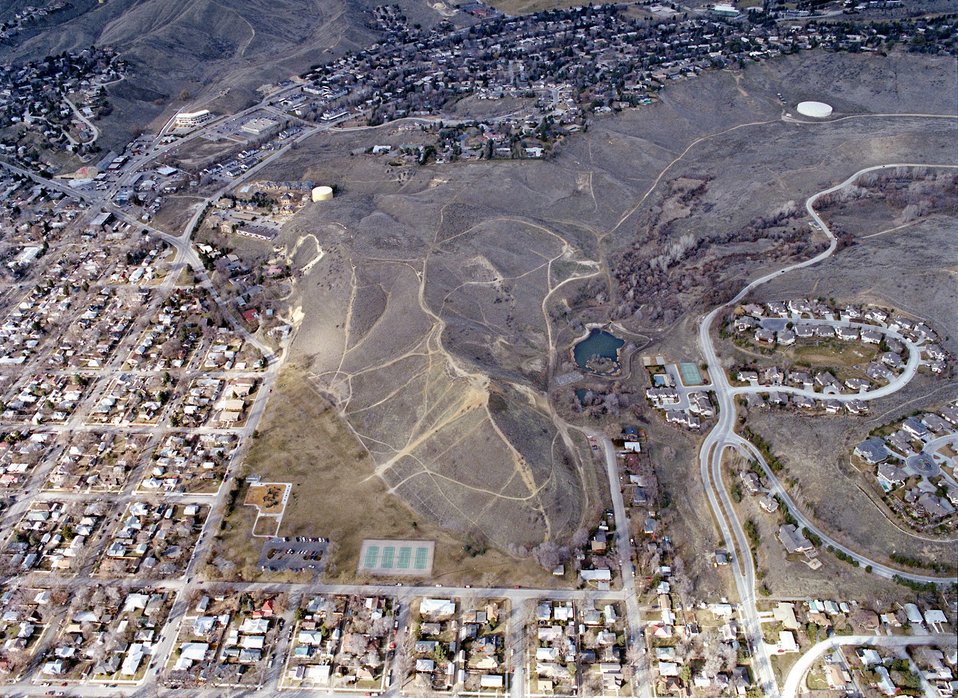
Recreation on the Boise Front Foothills Aerial Camels Back Park Four Rivers Field Office LSRD Lower Snake River District